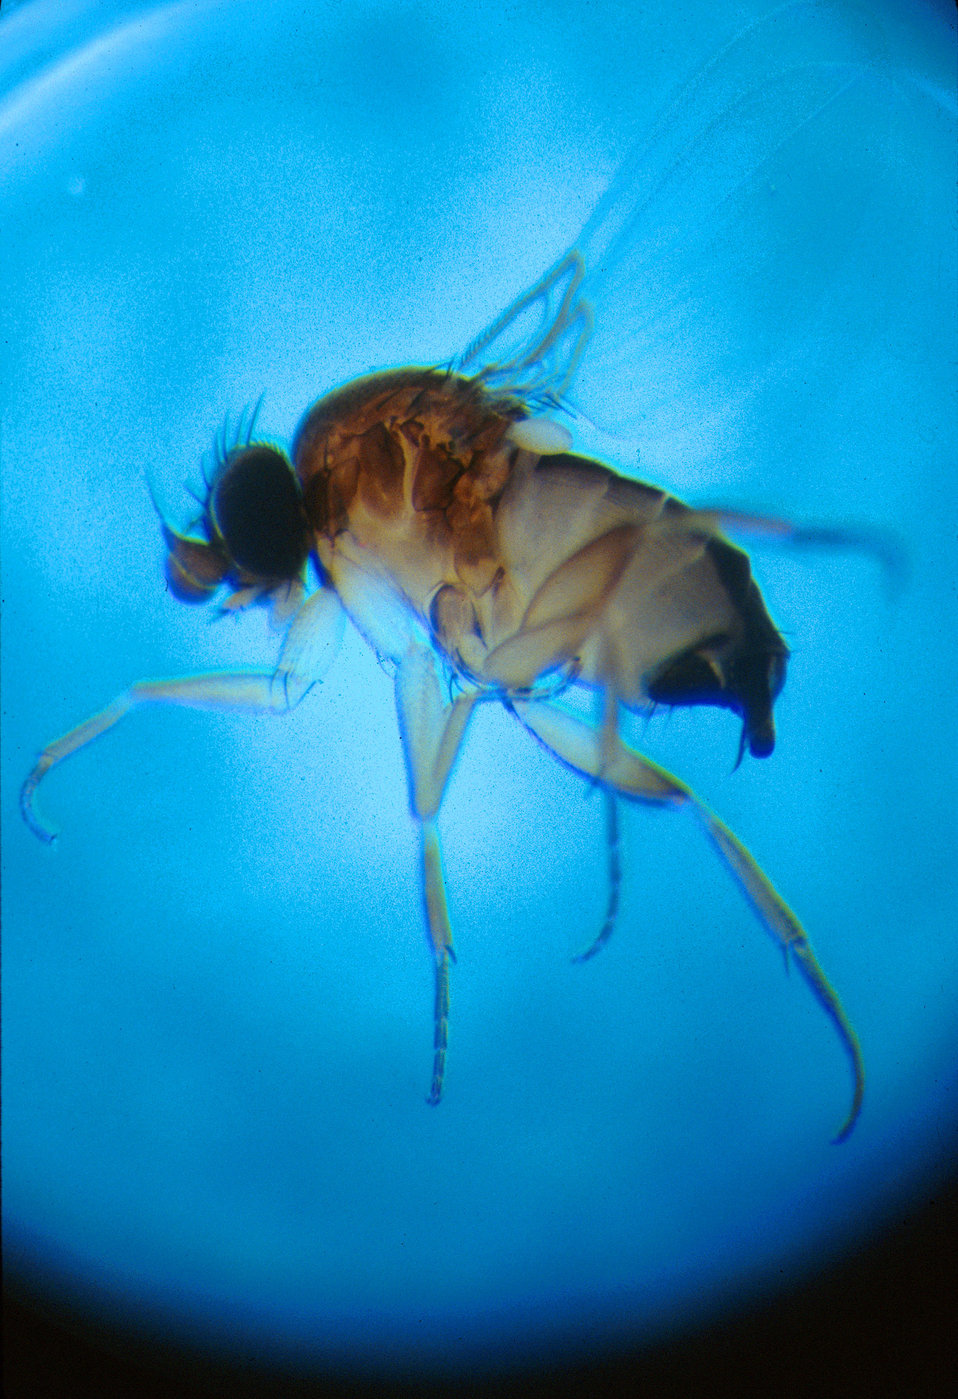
This is a phorid fly that measures only about one-sixteenth of an inch and is a deadly enemy of fire ants. A highly specific natural enemy, the female pierces a fire ant's head and releases an enzyme that later decapitates it.